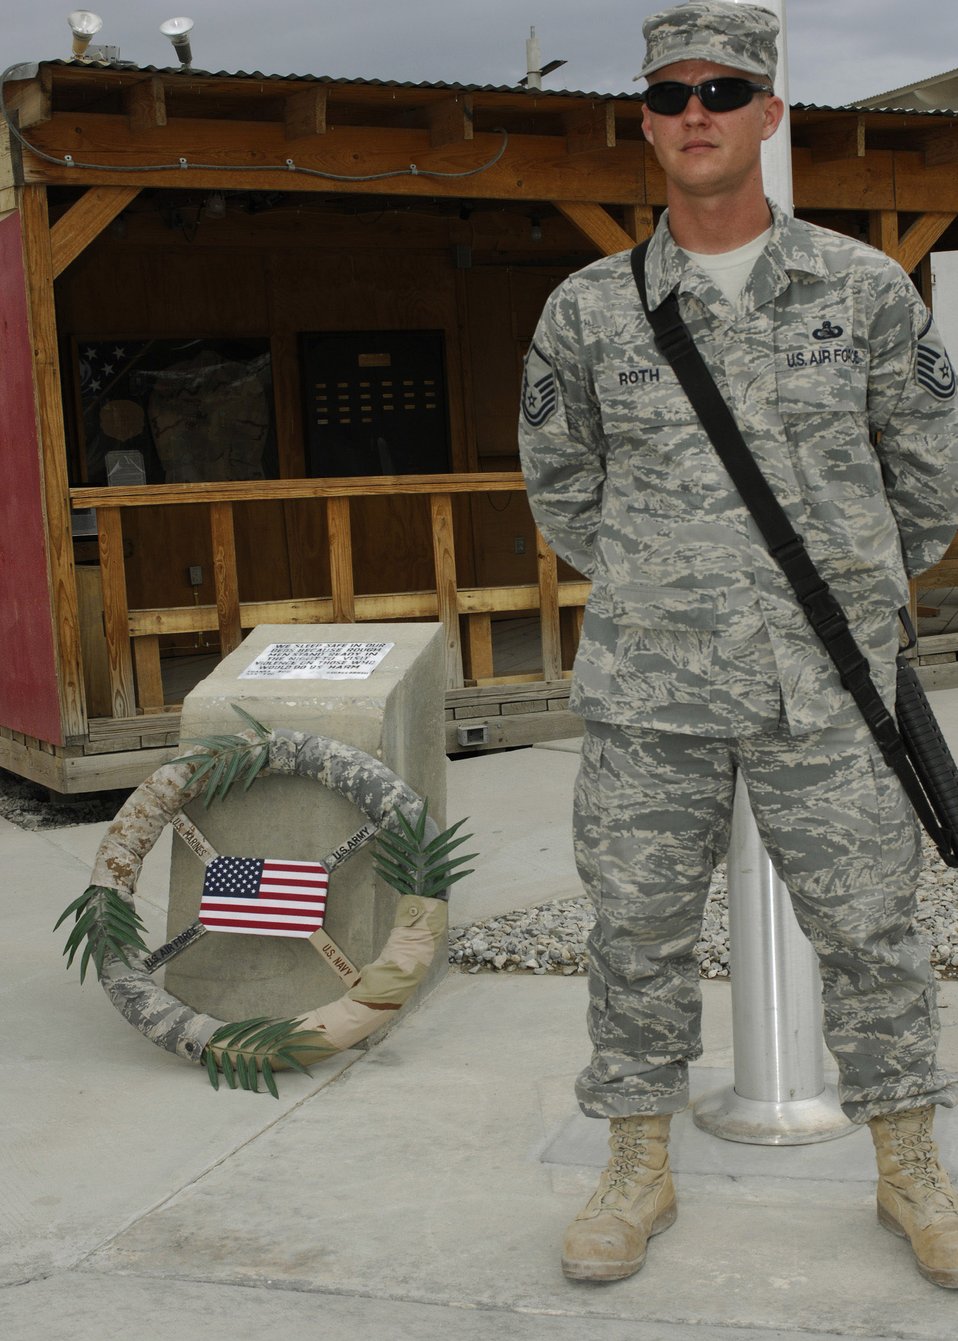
455 AEW holds memorial vigil

Master Sgt. Jerrod Roth stands watch during the 11-hour silent vigil at Bagram Air Base, Afghanistan, May 26. More than 130 Airmen and one civilian guarded the wreath laid at the camp's flag pole from 7:30 a.m. to 6:30 p.m., in honor of those who gave the ultimate sacrifice. Sergeant Roth is deployed to the 455th Expeditionary Force Support Squadron.